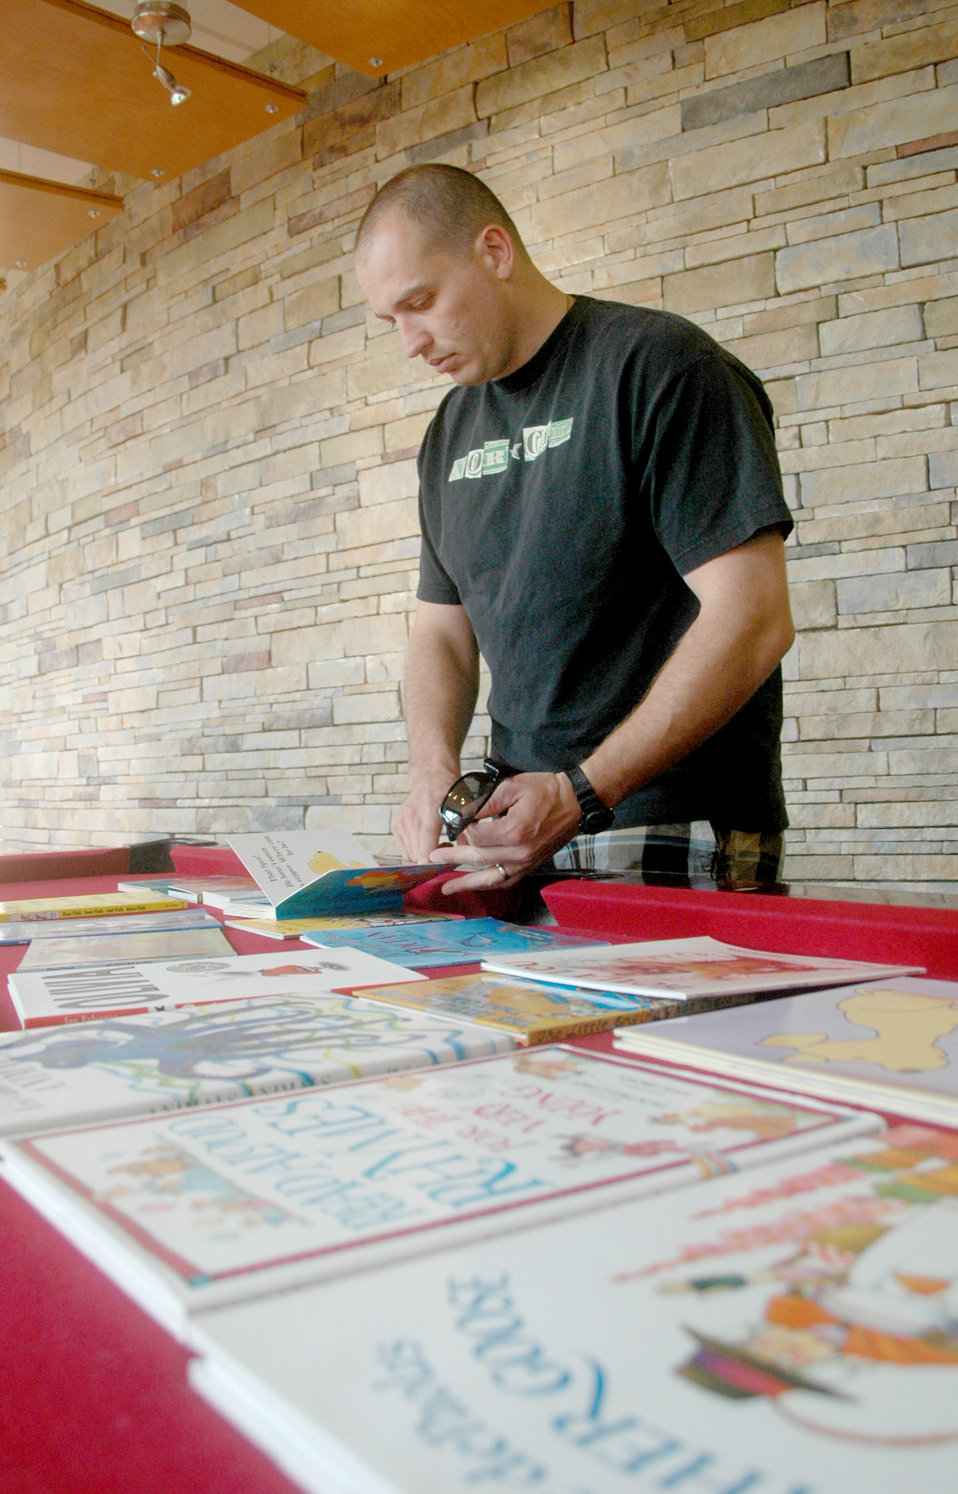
Story time

Tech. Sgt. David Aceveda sifts through books to read onto video Sept. 24, 2010, inside the USO Community Center on Dover AFB, Del., as part of the United Through Reading program. While Sergeant Aceveda is deployed, the pre-recorded DVD and book will be sent to his children. Sergeant Aceveda is a member of the 744th Communications Squadron at Joint Base Andrews Naval Air Facility, Md.